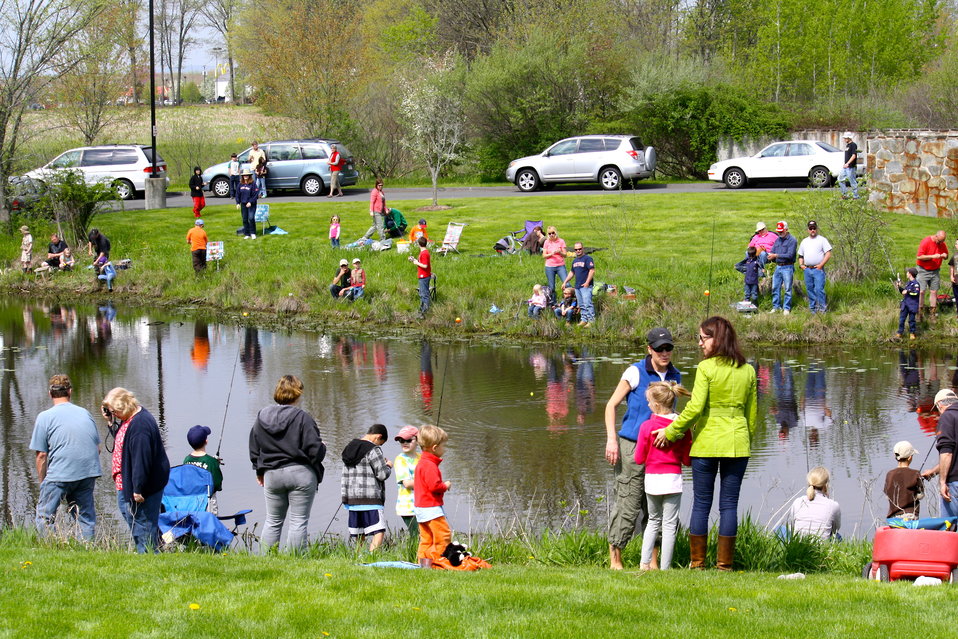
2011 Fishing Derby

View of the 2011 annual Fishing Derby held at the USFWS regional office in Hadley, MA.